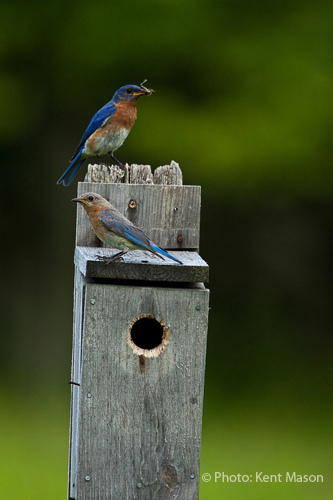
Nest Box Parents

An Eastern bluebird pair on nest box.